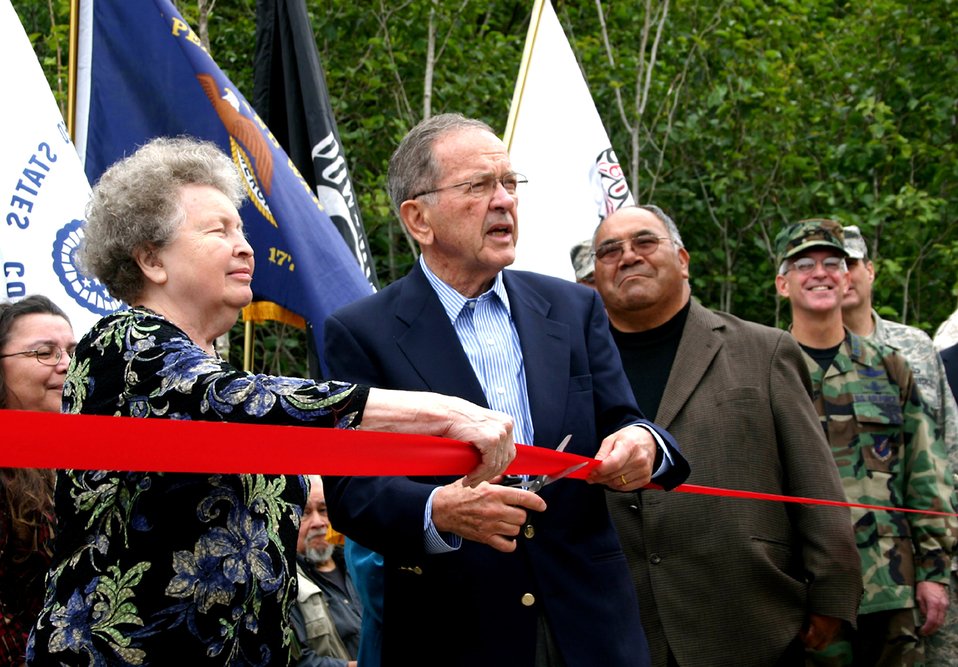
Big month for small Alaska town

Sen. Ted Stevens cuts the ribbon at the dedication ceremony with Freida Damuss Aug. 6 for the Operation Alaskan Road project in Metlakatla, Alaska. Ms. Damuss also scooped the first shovel of dirt at the beginning of the road project. At right are Mayor Victor Wellington Sr. and Lt. Gen. Douglas Fraser, the commander of Alaskan Command.